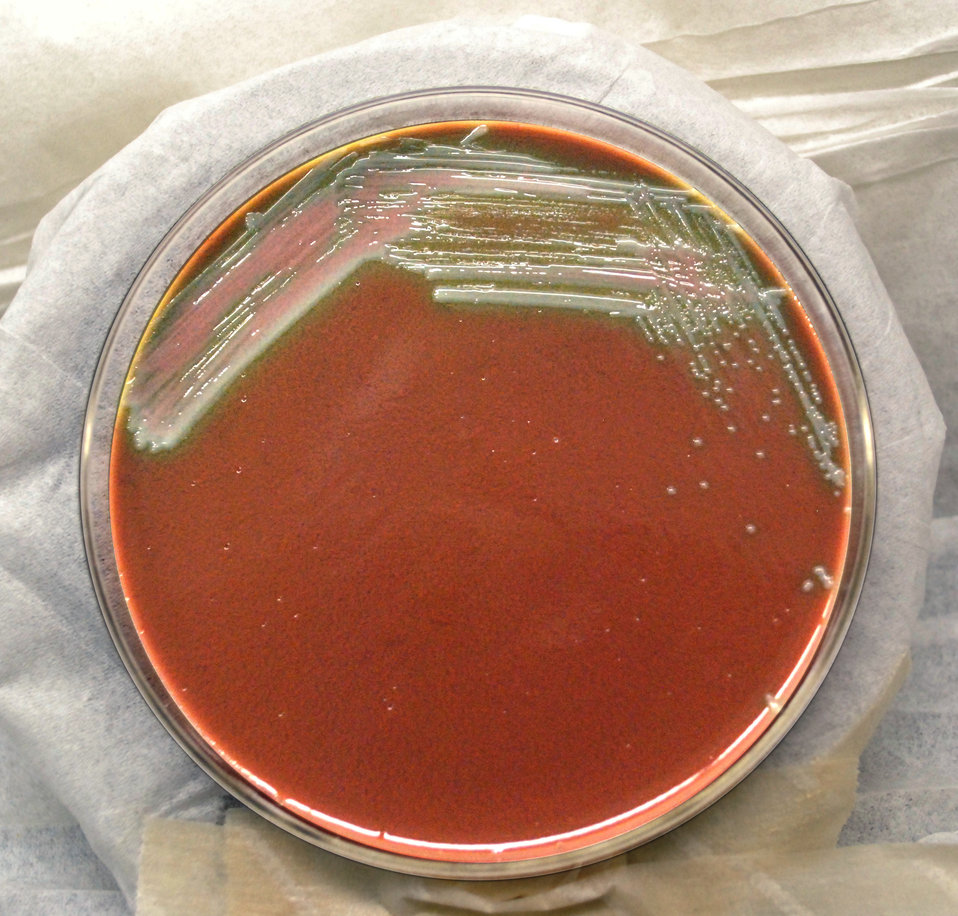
This photograph depicts the colonial morphology displayed by Gram-negative Francisella tularensis bacteria, which was grown on a medium of cysteine heart agar with 9% chocolatized blood (CHAB), for a 48 hour time period, at a temperature of 37�C. Take a look at PHIL 12510 for a closer view of these bacterial colonies.